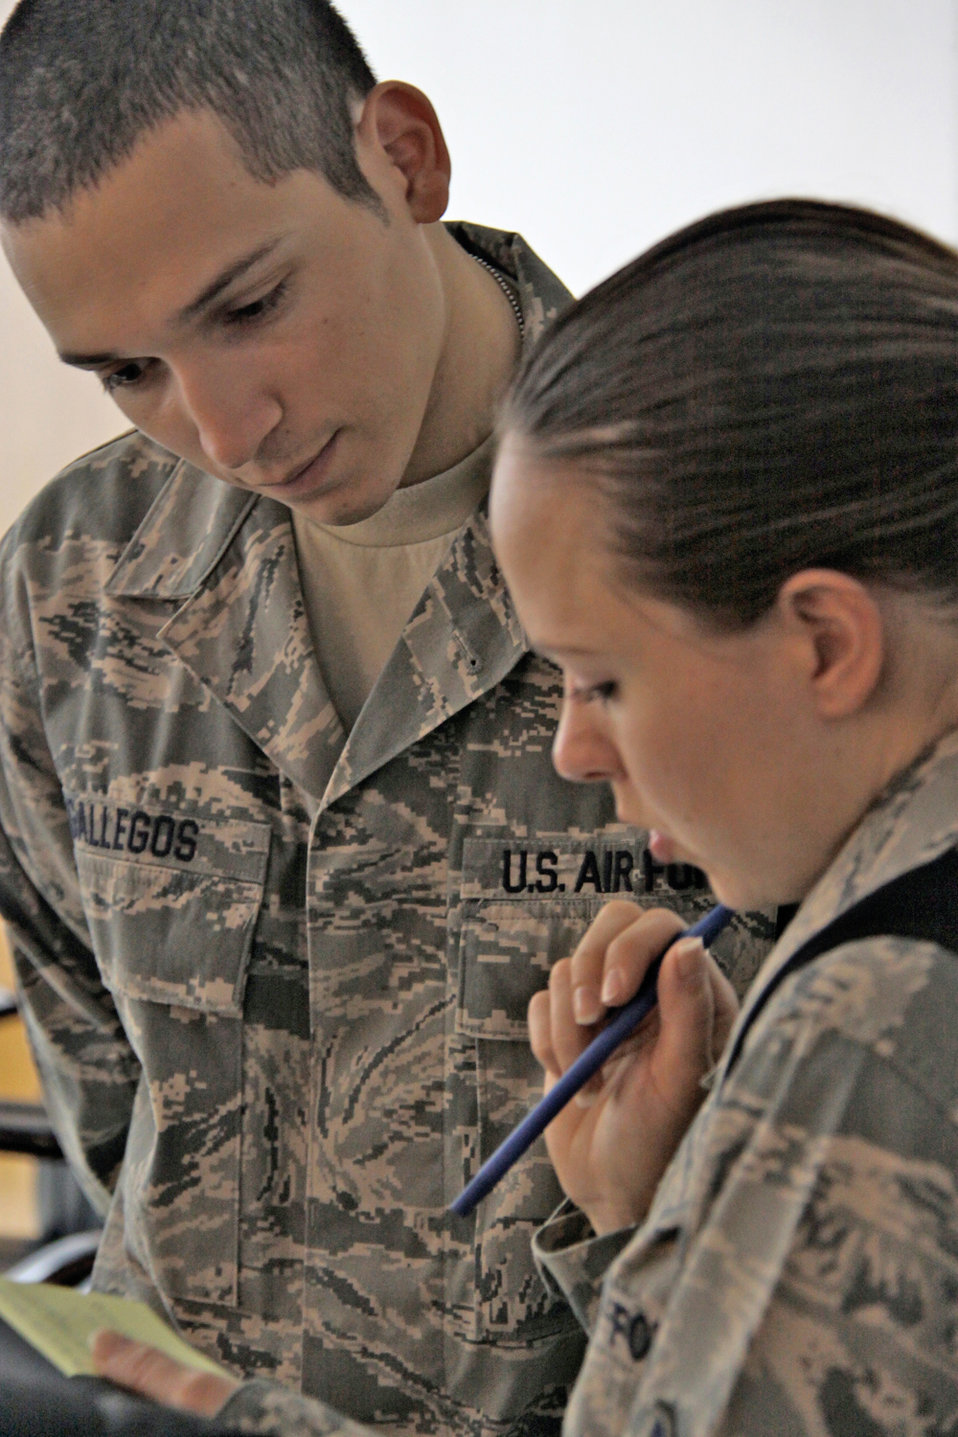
Airmen keep communication flowing

Staff Sgt. Juan Gallegos answers a question from Staff Sgt. Cheri Longenecker during the unit information management officer course recently at Camp Taji, Iraq. Sergeant Gallegos and his team teach this course weekly to train servicemembers to be a direct point of contact to help resolve computer system issues within their individual units. Sergeant Gallegos is a 518th Tactical Installation and Networking system administrator deployed from Hill Air Force Base, Utah. He is a native of Robert Lee, Texas. Sergeant Longenecker is the Counterinsurgency Center for Excellence command, control, communications, and computer systems staff section NCO in charge deployed from Ramstein Air Base, Germany. She is a native of Lancaster, Penn.